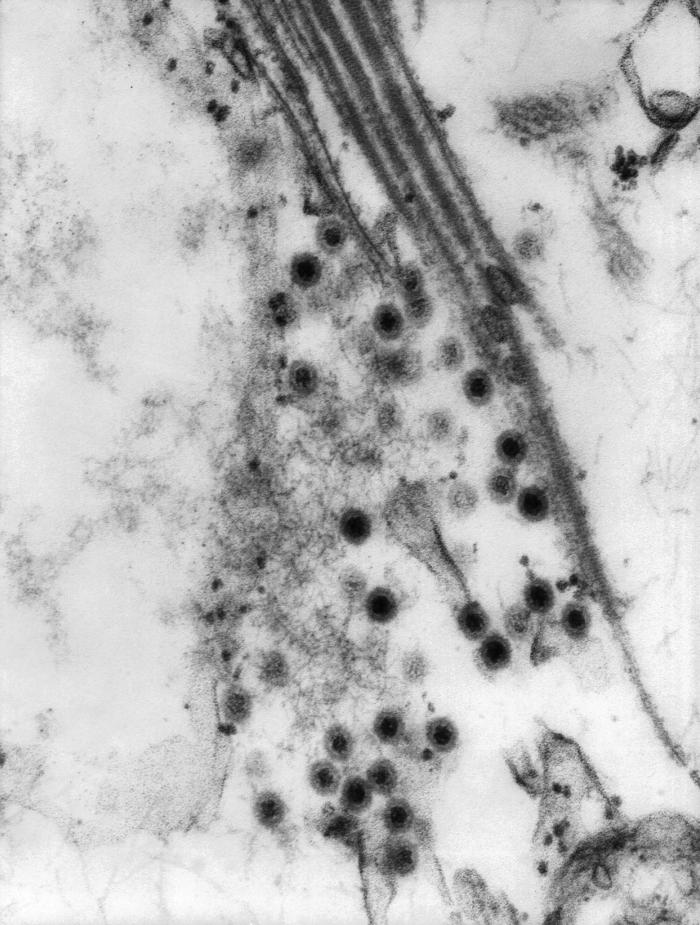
This transmission electron micrograph (TEM) revealed some of the morphologic details displayed by the Colorado tick fever virus (CTFV), a member of the genus Coltivirus, one of nine genera of the virus family known as the Reoviridae. Coltivirus particles are �80 nm in diameter and have a core �50 nm in diameter. Electron microscopic studies have shown particles with a relatively smooth capsomeric surface structure, and icosahedral symmetry.